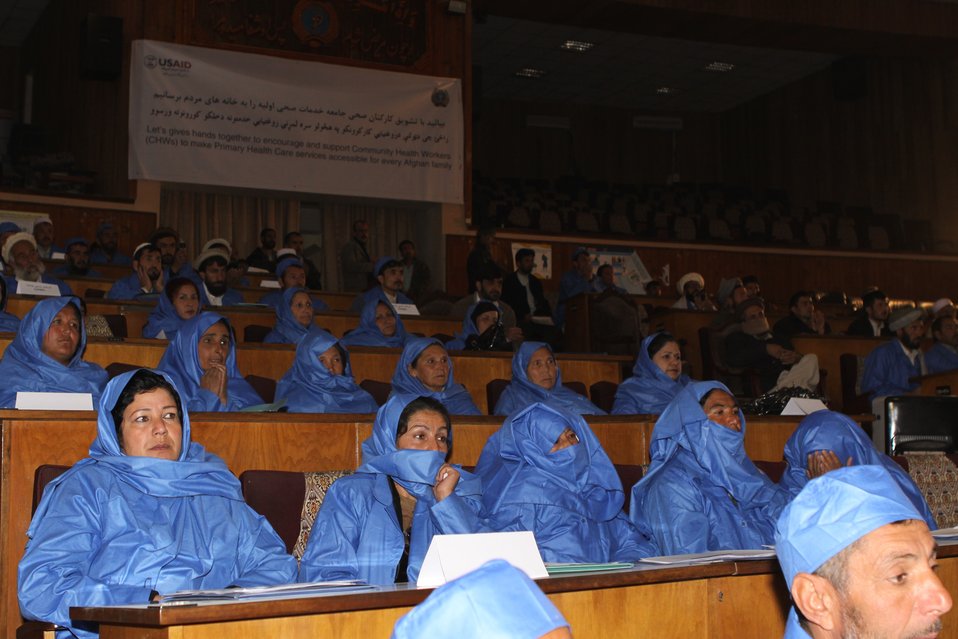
Community Health Workers Celebrated

Kabul, Afghanistan | December 5, 2010 — In support of the United Nations designated International Volunteer Day for Economic and Social Development, Afghanistan’s Ministry of Public Health celebrated its annual Community Health Worker Day today. Acting Minister of Public Health Dr. Suraya Dalil, USAID Senior Deputy Mission Director Robert Hellyer, other government officials, and international donors joined in recognizing the critical contribution of community health workers in Afghanistan and encouraging them to continue their voluntary support to their communities.
The event praised the contributions of the more than 22,000 volunteers throughout the country who deliver community level health-education, counseling, and services out of village health posts located in private homes. The Ministry of Public Health envisioned that community-based healthcare programs will actively encourage communities and families to adopt healthy lifestyles and behaviors, and provide families access to high quality and socially acceptable preventative medicine and life-saving services.
“We have 22,000 community health workers in Afghanistan that are able to implement the basic and standard medicines. They all have been trained through a job description,” said Minister Dalil. Addressing the health workers, she added, “I am proud and feel powerful that I have people like you.”
USAID-funded health projects collaborate closely with the Ministry of Public Health to improve the health and nutritional status of Afghans, provide quality primary healthcare, and promote healthy behaviors at the community and household-levels. USAID supported the training of more than 9,000 of the volunteer community health workers currently working in Afghanistan.
“On behalf of the American people, I congratulate the Community Health Workers for their diligence to gain the skills and knowledge necessary to serve their communities in this important role,” said USAID Senior Deputy Mission Director Hellyer. “USAID strongly supports community based health care and believes that quality community-based health services are essential to reaching Afghanistan’s Millennium Development Goals.”
To support the Basic Package of Health Services, USAID assisted in developing the community health worker training manual, helped train community health worker supervisors and master-trainers, facilitated in-service training, and produced and developed reporting tools, job aids, and education materials.